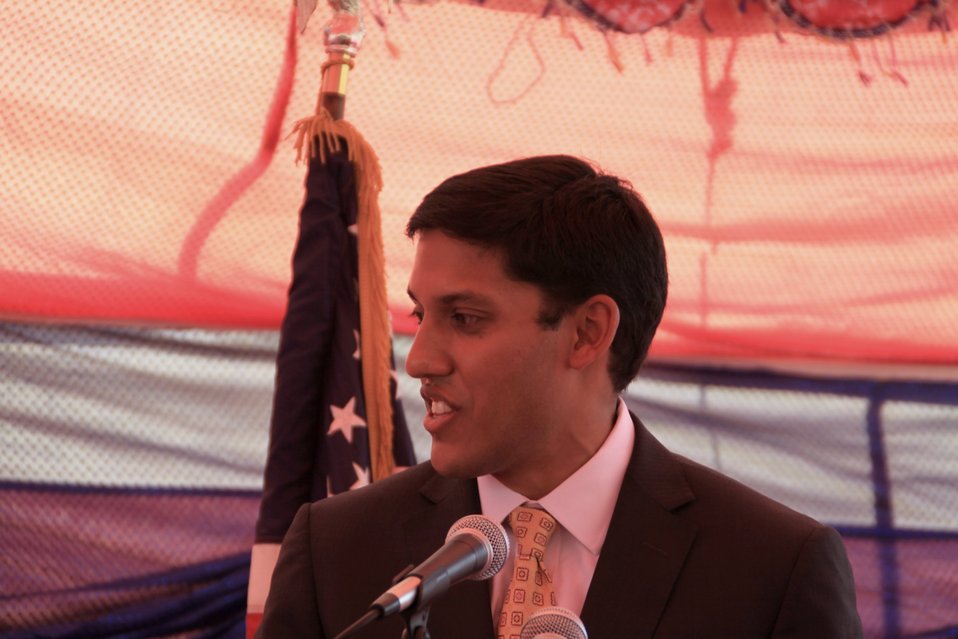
Badam Bagh Farm